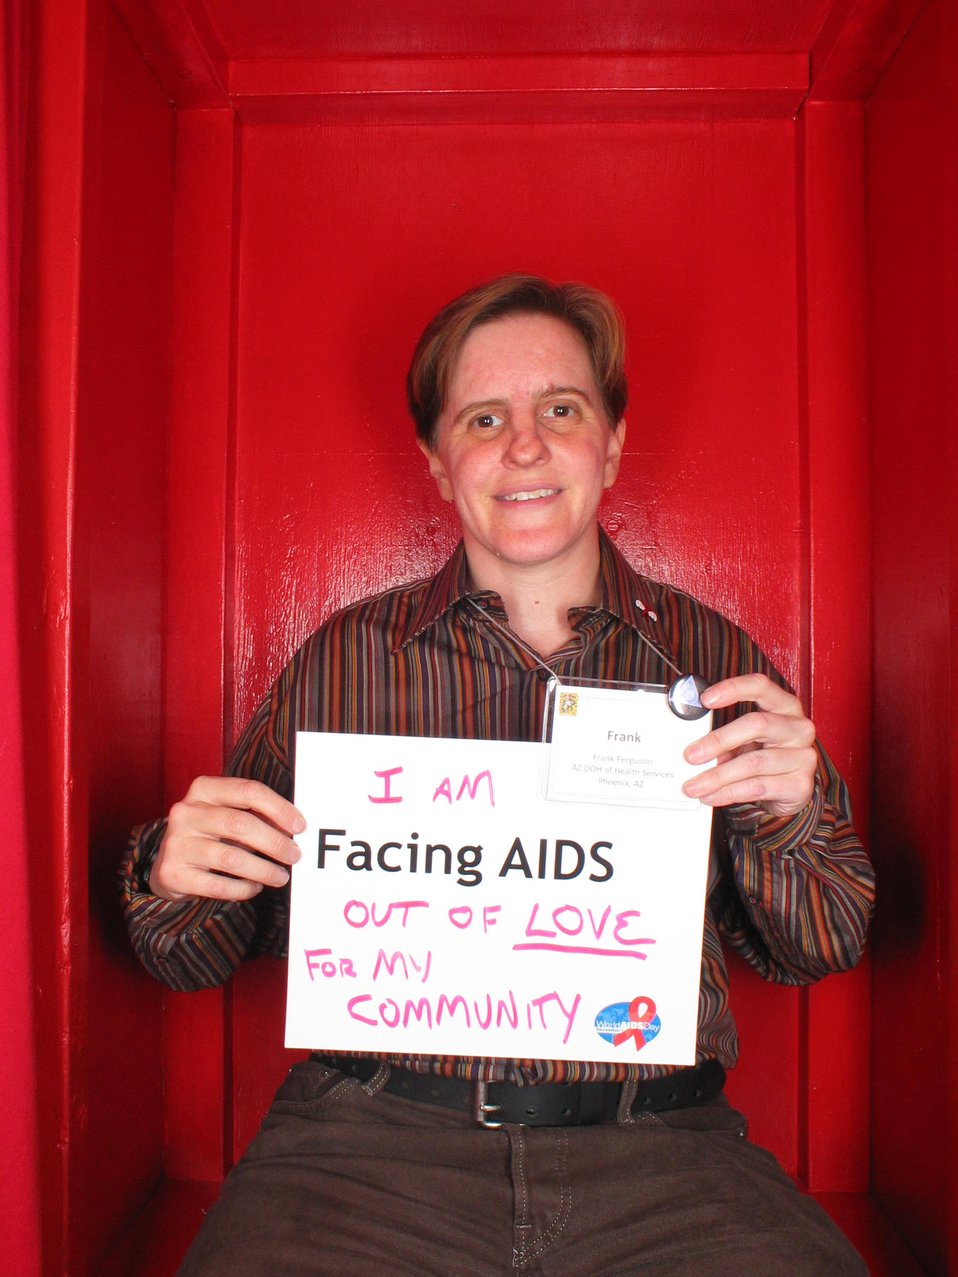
I am Facing AIDS out of LOVE for my community.